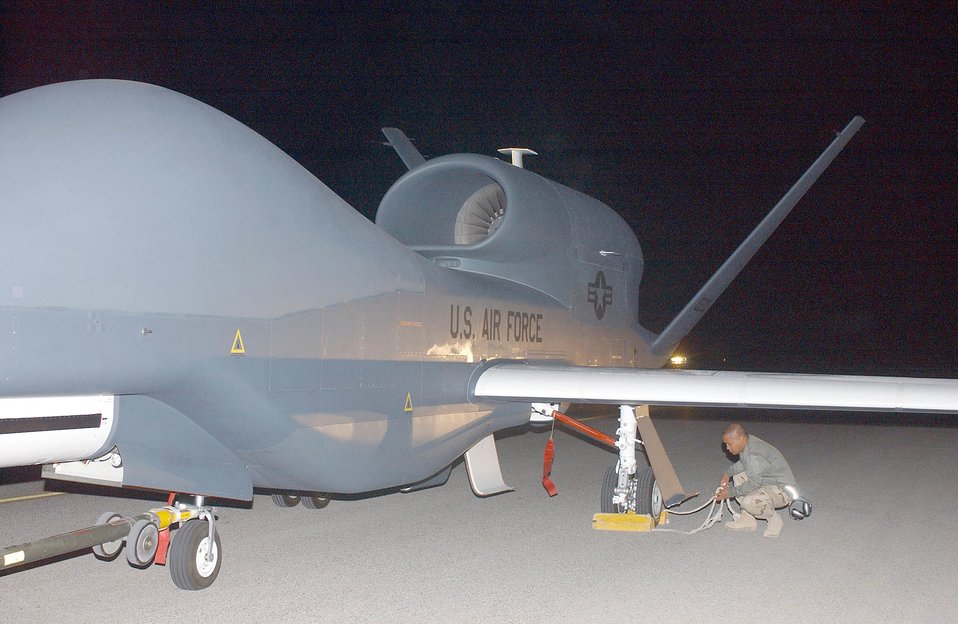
Global Hawk arrives in Southwest Asia

SOUTHWEST ASIA (AFPN) -- Senior Airman Richard Griego puts chocks under a Global Hawk at a desert base. The unmanned aerial vehicle is the Air Force's first production Global Hawk and the first deployed. It has been upgraded from previous models. Airman Griego is an avionics technician with the 380th Expeditionary Aircraft Maintenance Squadron and deployed from Beale Air Force Base, Calif.